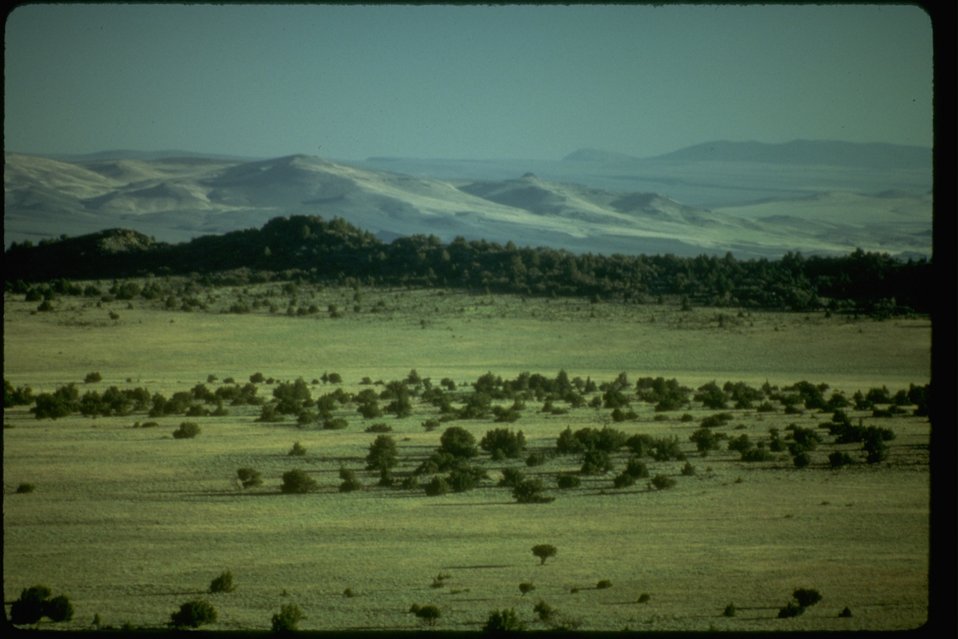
Juniper and Sage flat at the north end of Fish Creek. OR 1-117